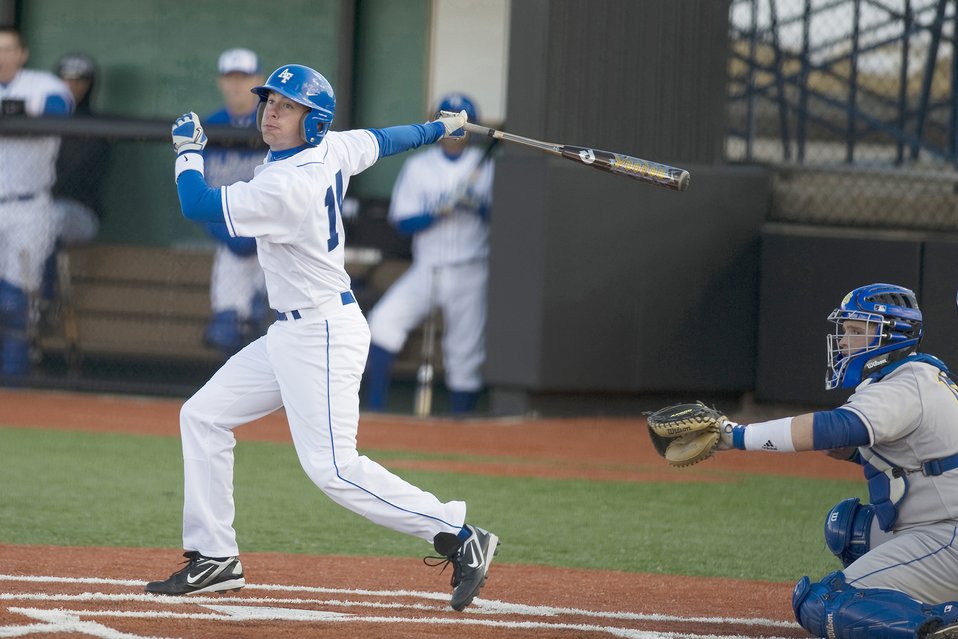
Falcons defeat South Dakota State

Air Force freshman infielder Matthew Roberts watches the ball head for left field in the matchup against South Dakota State March 5, 2010, at the U.S. Air Force Academy's Falcon Field in Colorado. The Falcons rallied with 6 runs in the bottom of the 8th inning to win the contest 12-11.